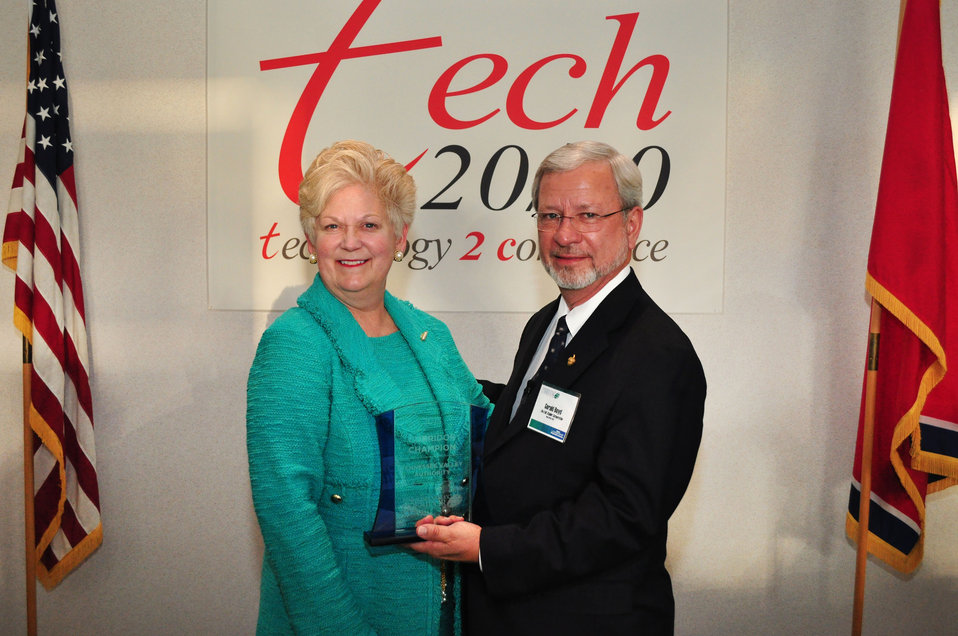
Tennessee Valley Corridor Summit Oak Ridge

13-062 DOE photo Lynn Freeny 5-29-2013 Oak Ridge Tennessee